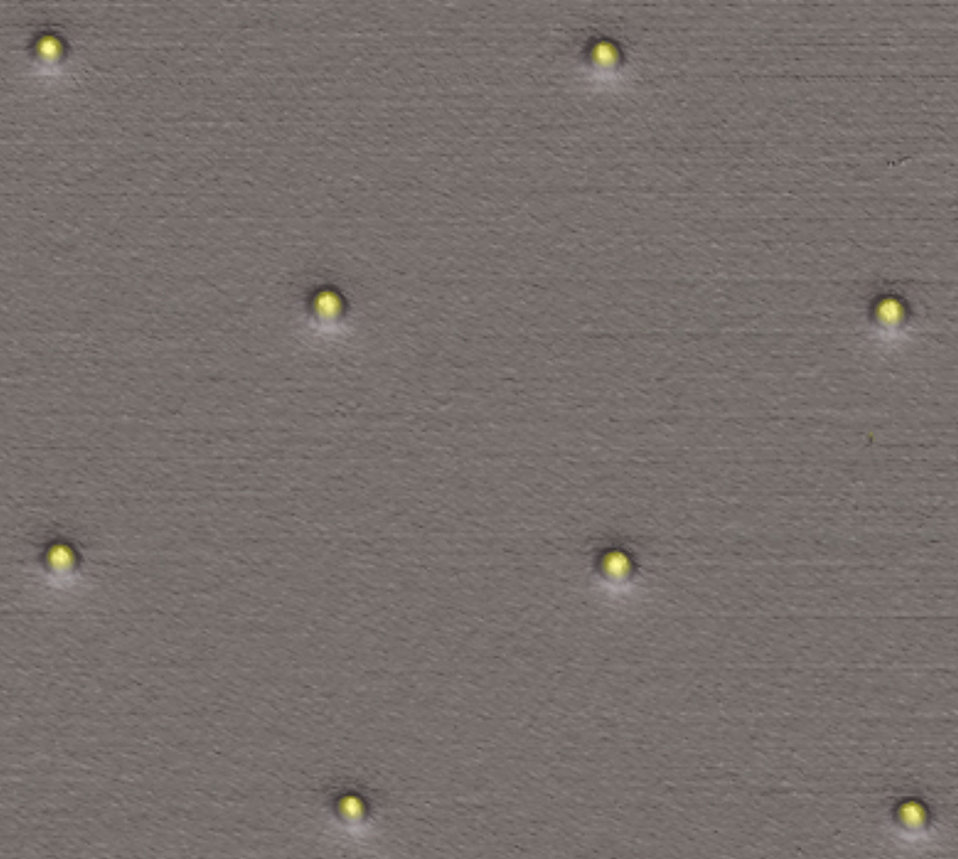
Biomolecules; Laser-safe Gold

The gold posts in this colorized micrograph, averaging 450 nanometers in diameter, are used to anchor individual biomolecules such as DNA for studies of their mechanical properties. The background surface is glass coated with a protein to prevent unwanted sticking.